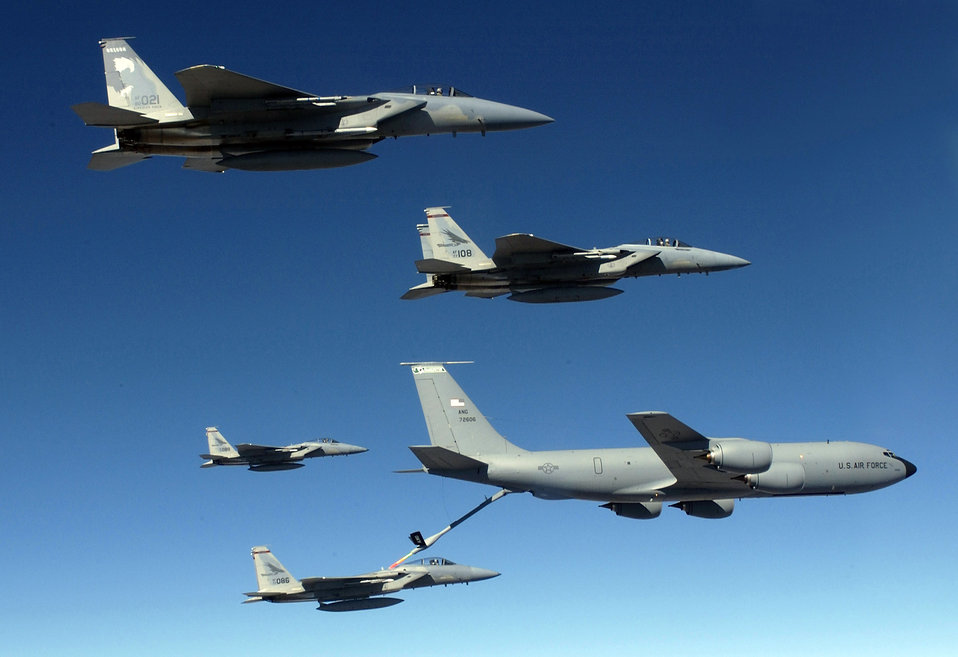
Sentry Eagle

KINGSLEY FIELD, Ore. -- A formation of F-15 Eagles from the Oregon Air National Guard receive fuel from a Washington Air National Guard KC-135 Stratotanker during Exercise Sentry Eagle on Aug. 10th. Sentry Eagle is a biannual, two-day exercise held by the Oregon Air National Guard’s 173rd Fighter Wing. The exercise emphasizes tactics for defending friendly airspace and assets from a variety of adversaries as well as exposing participants to multiservice military forces.